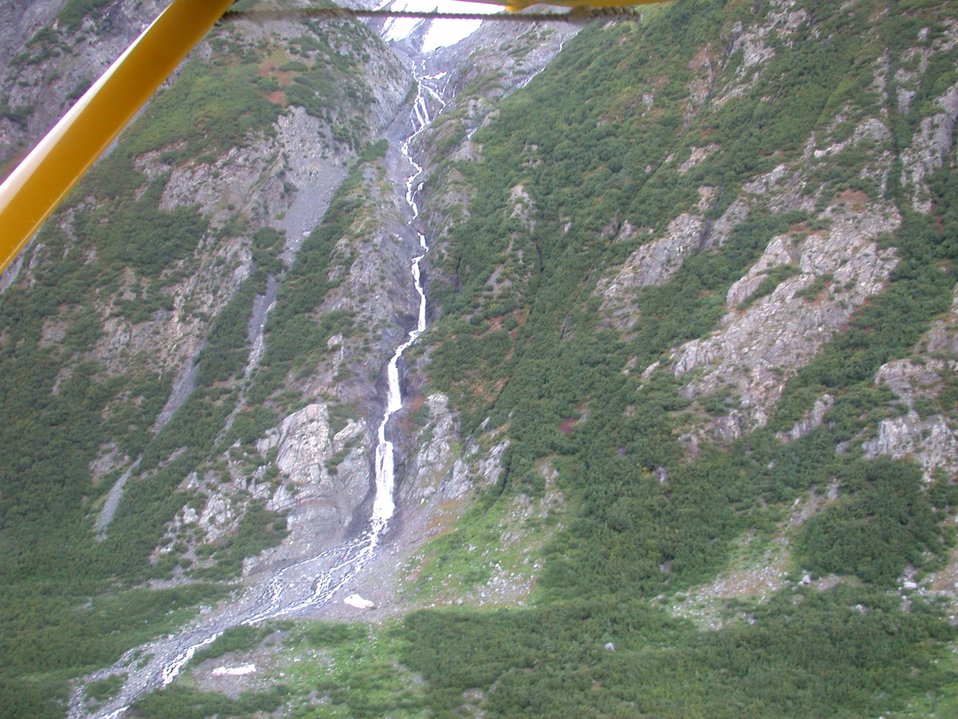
Float plane sightseeing along the Richardson Highway. One of hundreds of waterfalls in Alaska.